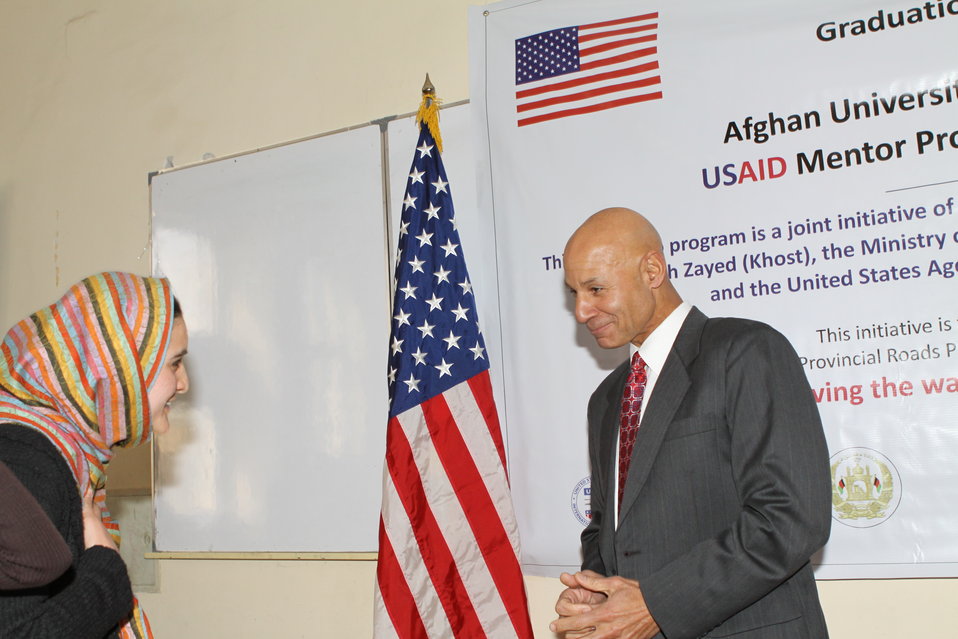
Female University Students Complete Internship

Kabul, Afghanistan | March 16, 2011 – In response to a demand for qualified Afghan engineers, Kabul University celebrated completion of an intensive five-month Mentor Protégé Training Program today by 10 female fourth year university students. The Training Program is a joint effort between the Government of the Islamic Republic of Afghanistan, the U.S. Agency for International Development (USAID), and the Universities of Kabul, Kandahar, Alberoony in Kapisa, Shiekh Zayed in Khost. The graduation ceremony highlighted collaboration with these national institutions in building the technical skills of young Afghans, made possible by USAID.

Four of the interns are engineers, while the remaining six are from the faculties of computer science, economics, and psychology.

Speaking about the event, H.E. Minister of Public Works Abdul Qudus Hamidi said, “The future of Afghanistan lies in developing the skills of our youth, and the engineering skills of these graduates today represent a small but important step forward for the country.”

Keynote speakers at the ceremony included H.E. Deputy Minister of Higher Education Abdul Rahim; USAID Senior Deputy Mission Director Robert Hellyer; and Chancellor of Kabul University Professor Hamidullah Amin. Approximately 150 people, including current and former students attended the graduation.

Launched last year, the Mentor Protégé Training Program has provided qualifying students the opportunity to intern with USAID’s Strategic Provincial Roads-South and East Afghanistan project and gain practical experience in a real work environment. The goal of the program was to offer interns the opportunity to gain hands-on experience to reinforce their formal studies. A total of 30 students from four national universities have benefitted from this program.

“The promotion of women’s rights is integrated into the overall U.S. Government development strategy and can be found in key programs, including education, healthcare, security, rule of law, political participation, agriculture, and economic development,” said Robert Hellyer. “The U.S. Government is committed to the Afghan leadership of programs that directly enhance development, particularly as it relates to women’s issues.”

This event also highlighted the learning achievements of students and emphasized the importance of hands-on internship programs. The curriculum is designed to instill students with the knowledge and confidence to qualify for engineering positions upon completion of their fourth year at their respective universities.